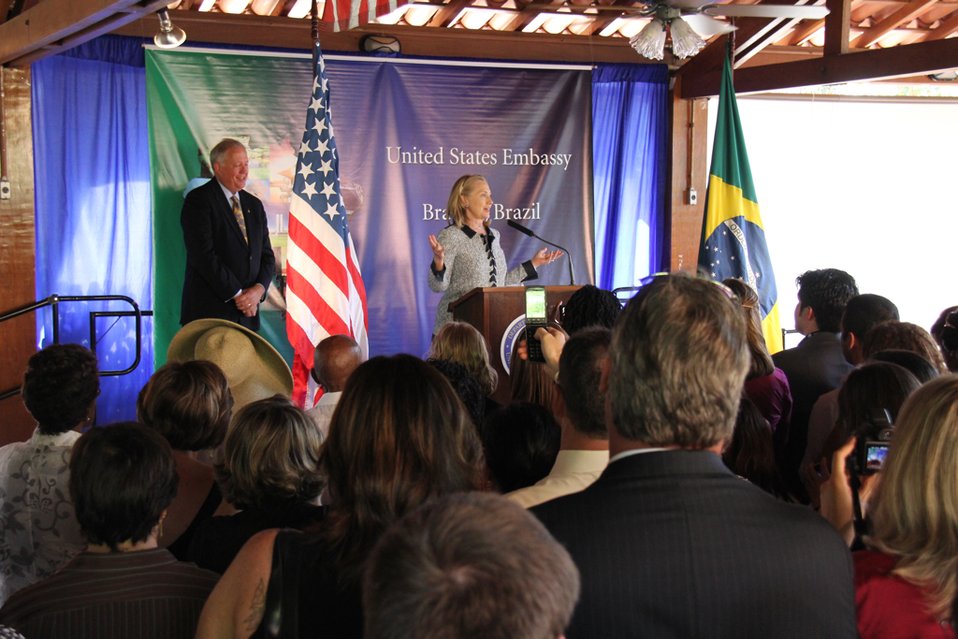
Secretary Clinton Addresses Embassy Brasilia Staff and Families

U.S. Secretary of State Hillary Rodham Clinton, flanked by U.S. Ambassador to Brazil Thomas A. Shannon, addresses the staff and families of the U.S. Embassy in Brasilia, Brazil, on April 16, 2012.